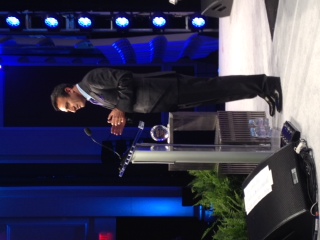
Chobani President and CEO Ulukaya Delivers Remarks

Chobani President and CEO Hamdi Ulukaya delivers remarks after receiving the National Entrepreneurial Success of the Year Award for 2012 by the U.S. Small Business Administration (SBA) in Washington, D.C., on May 23, 2012.